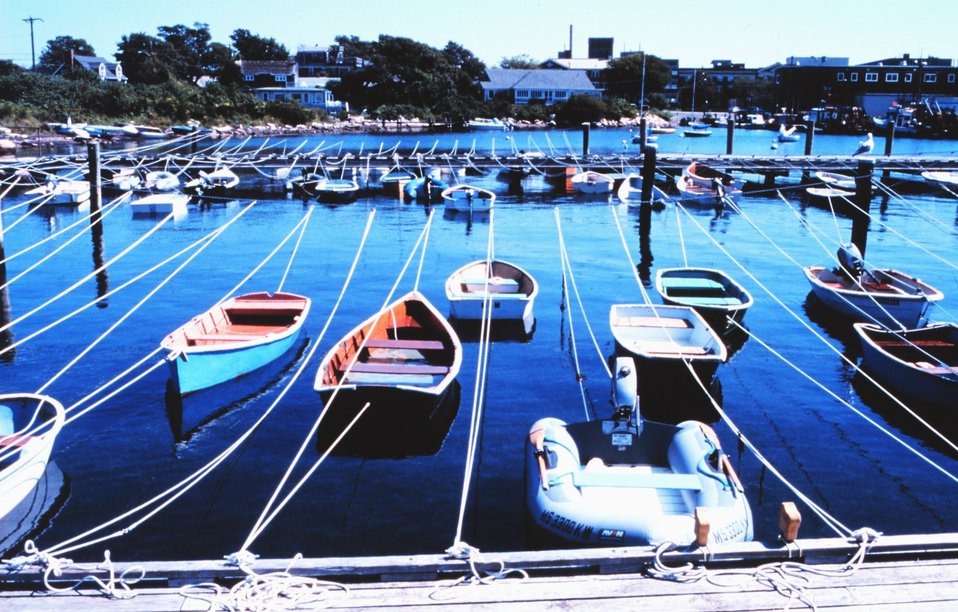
Woods Hole Yacht Club, Great Harbor at Woods Hole (National Marine Fisheries Service facility on right)